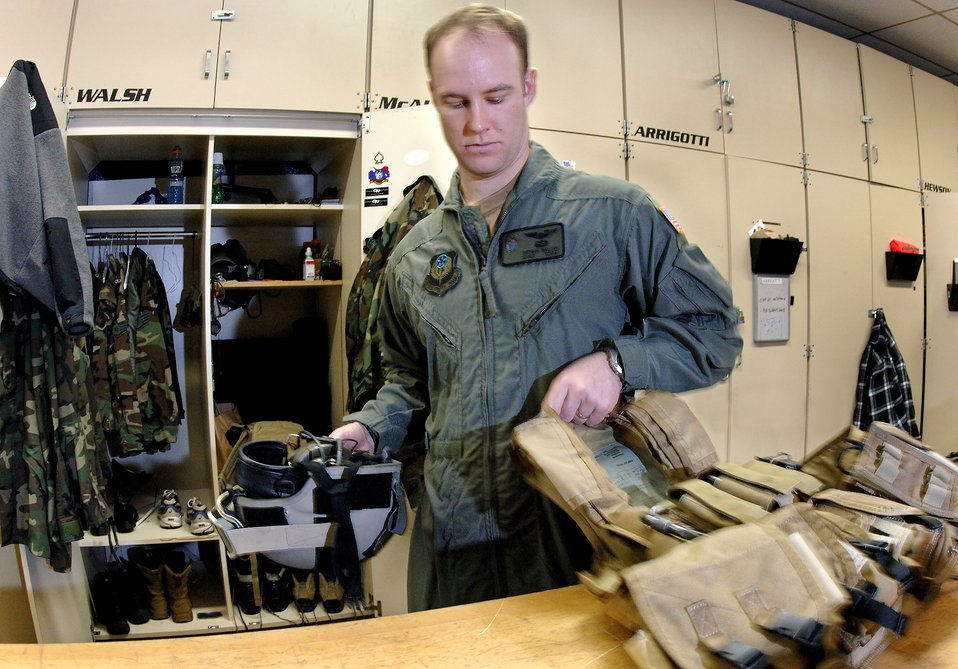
Guard wing makes mark on history

Staff Sgt. Bryan Walsh puts away his load-bearing vest and helmet after a mission. Sergeant Walsh is a pararescueman with the New York Air National Guard's 103rd Rescue Squadron.